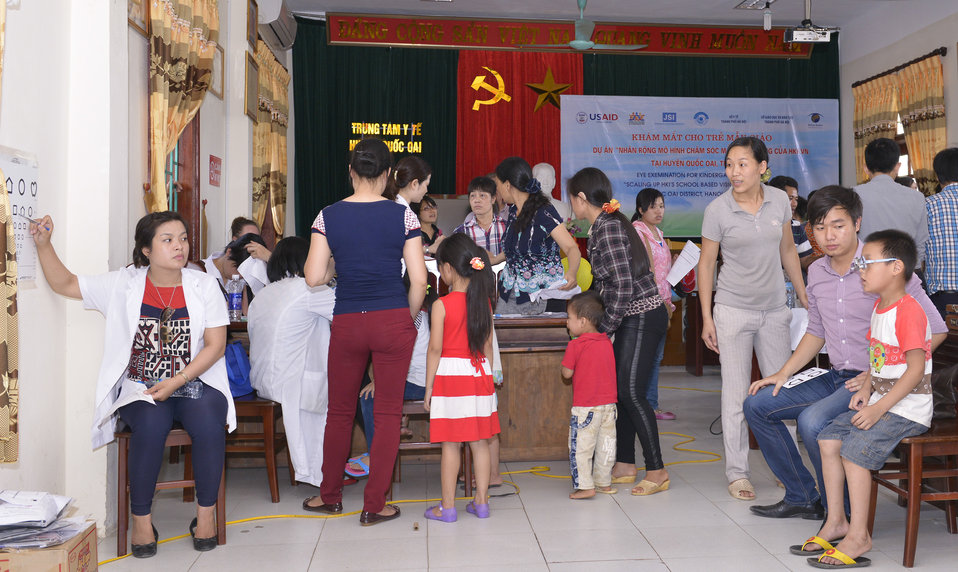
Eye screening for kindergarten children in Quoc Oai district of Hanoi

Quoc Oai, Hanoi. May 31, 2014.